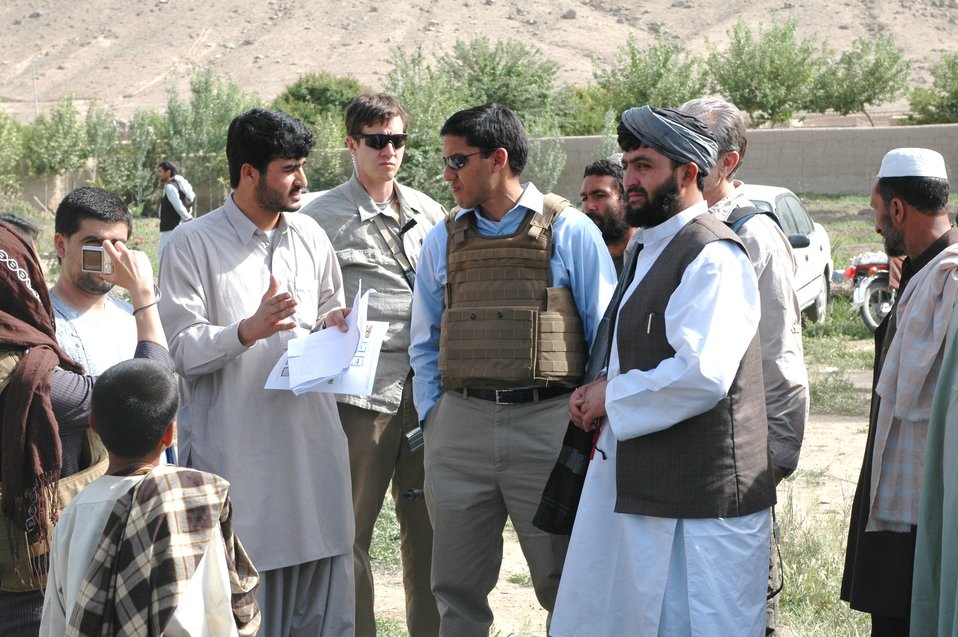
Dr Shah Visits Argandab April 10, 2010